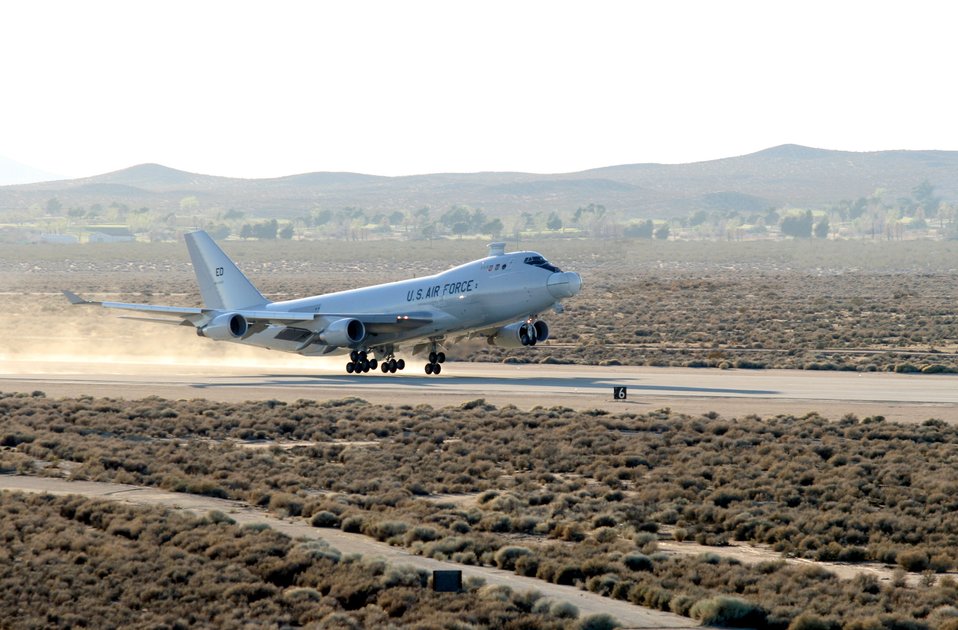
Deadly aim: Airborne Laser fires tracking laser, hits target

The YAL-1A Airborne Laser, a modified Boeing 747-400F, takes off from Edwards Air Force Base, Calif., on March 15, 2007, for a five-hour test mission. During the flight, the aircraft's target illuminator laser fired for the first time. The Airborne Laser is undergoing a long-term test phase at the Air Force Flight Test Center here in preparation for the integration later in the year of the chemical oxygen iodine laser, or COIL, a missile-killing, high-energy chemical laser.